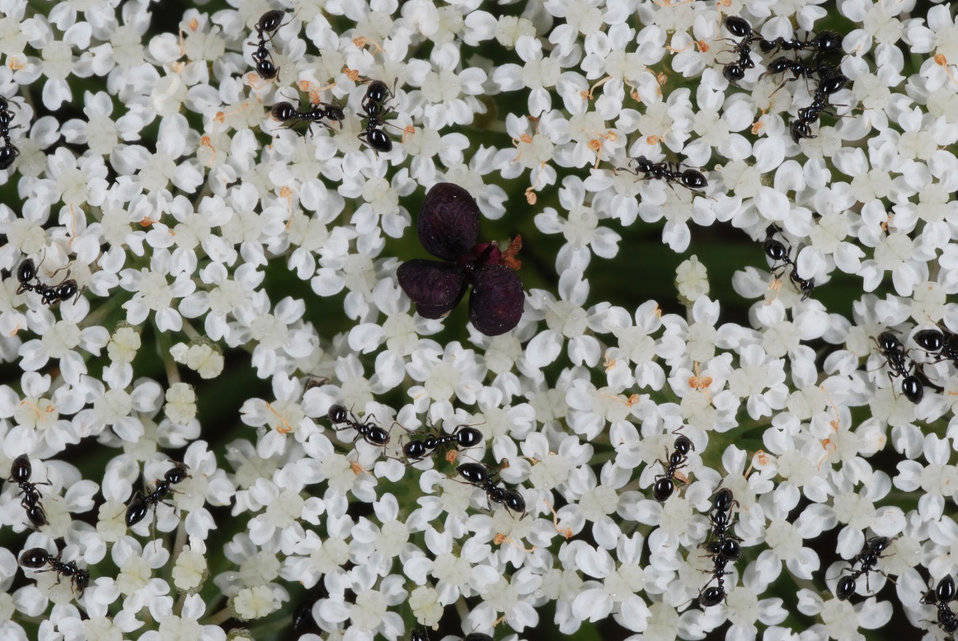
Daucus Car 1 (2)

Daucus: Top-view of the flower structure of Daucus carota, Queen Anne’s lace or wild carrot, Bedford County, Virginia. Doug Goldman, USDA-NRCS-NPDT